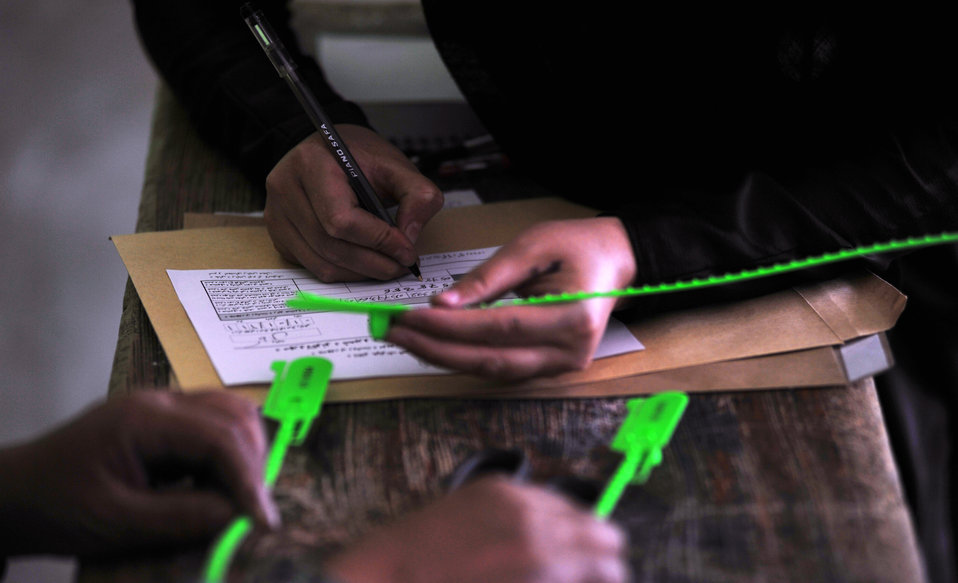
A worker of IEC register ballots box at a polling center in Kabul.